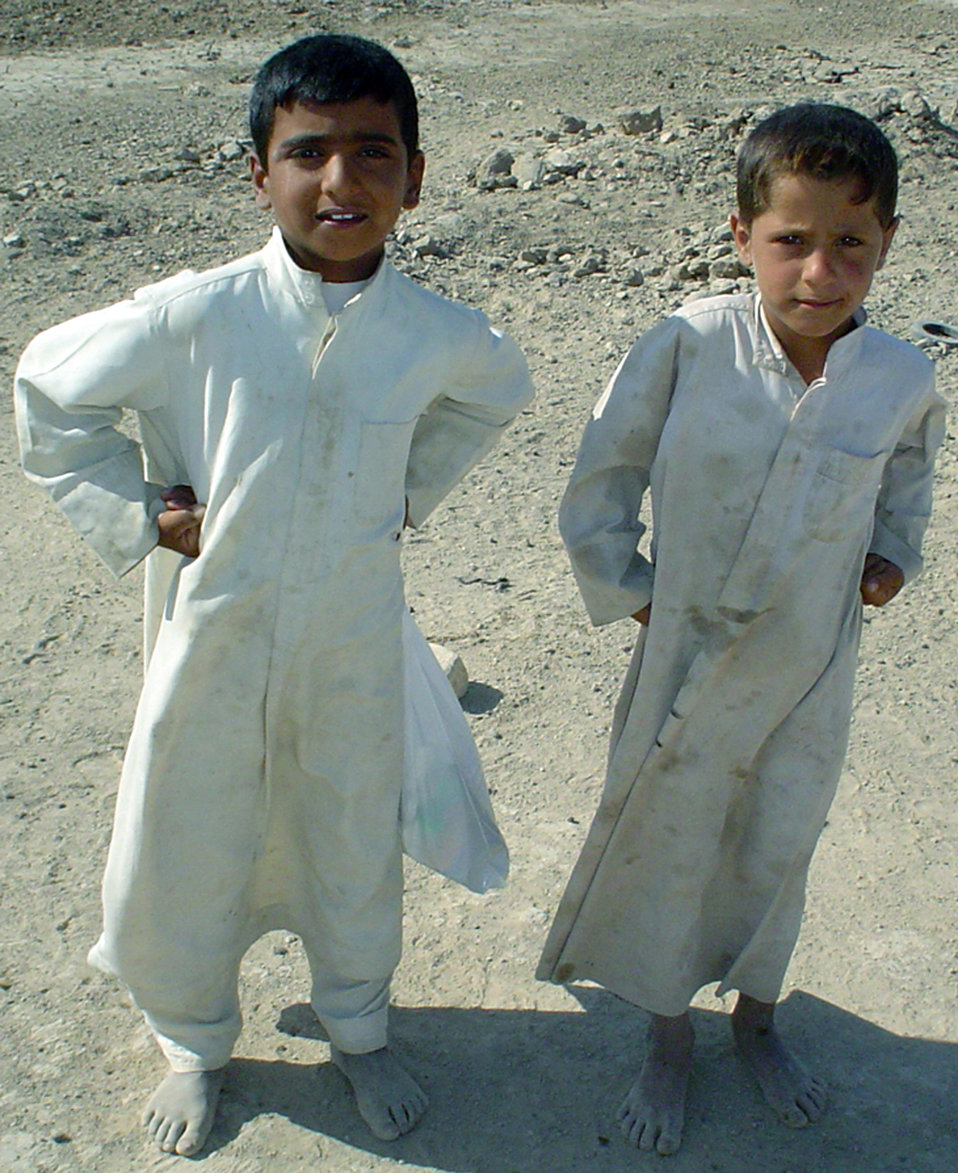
Airmen reach out to locals

TALLIL AIR BASE, Iraq -- Two Bedouin children pose for a photograph on the perimeter of the base during an Operation Reach Out visit. The operation was created to establish a rapport with families living near the base.